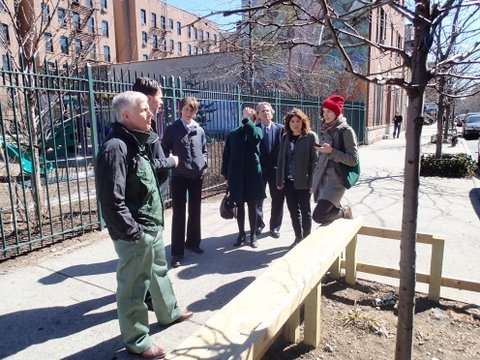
NYC Urban forest Chief

U.S. Forest Service Chief Tom Tidwell tours New York City with agency employees and representatives from the New York City Department of Park and Recreation. The Forest Service has placed a renewed emphasis on the health of America’s 100 million acres of urban forests.